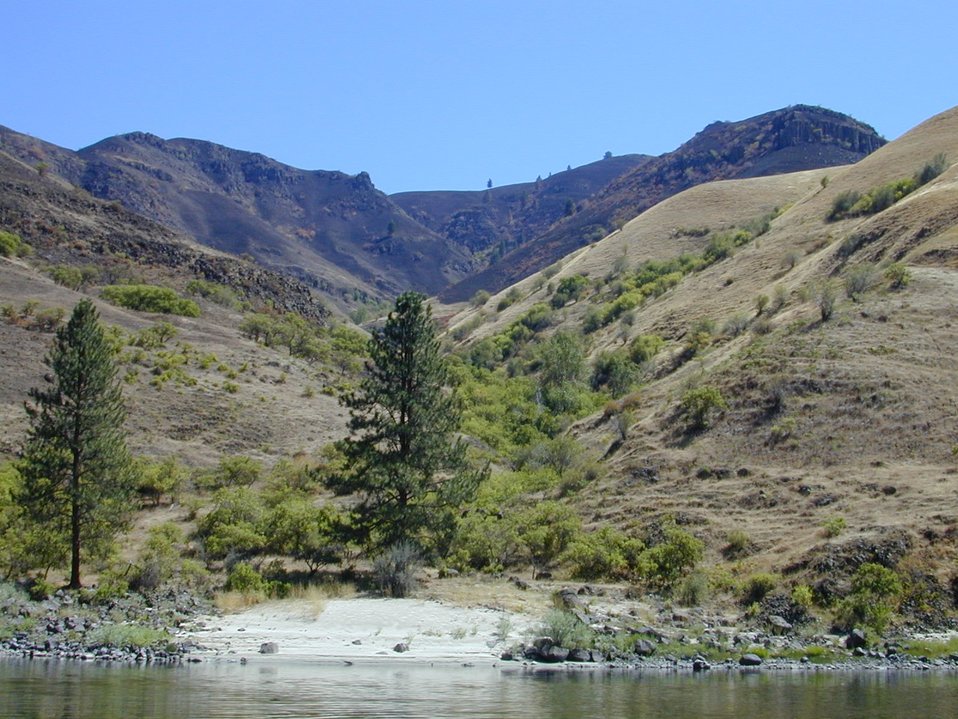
Scenic shot of Lower Salmon River Cottonwood Field Office UCSC Upper Columbia Salmon Clearwater District